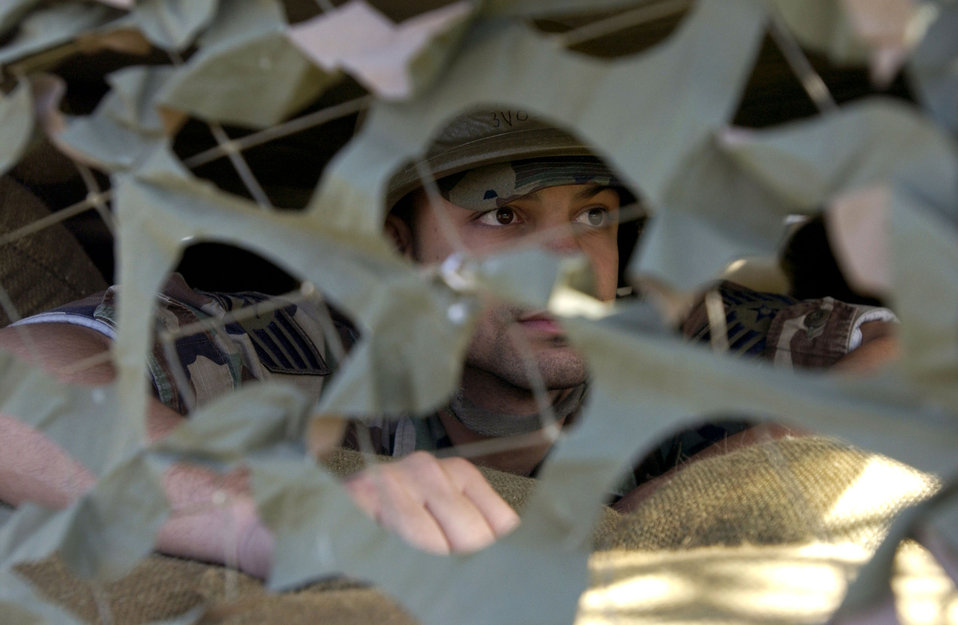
Can you see me now?

LANGLEY AIR FORCE BASE, Va. -- Staff Sgt. Pablo Torres protects himself from an enemy attack during an exercise May 13 here. The exercise will help officials evaluate the 1st Fighter Wing's ability to survive and operate at a deployed location. Torres is a graphics artist with the base's 1st Communications Squadron.